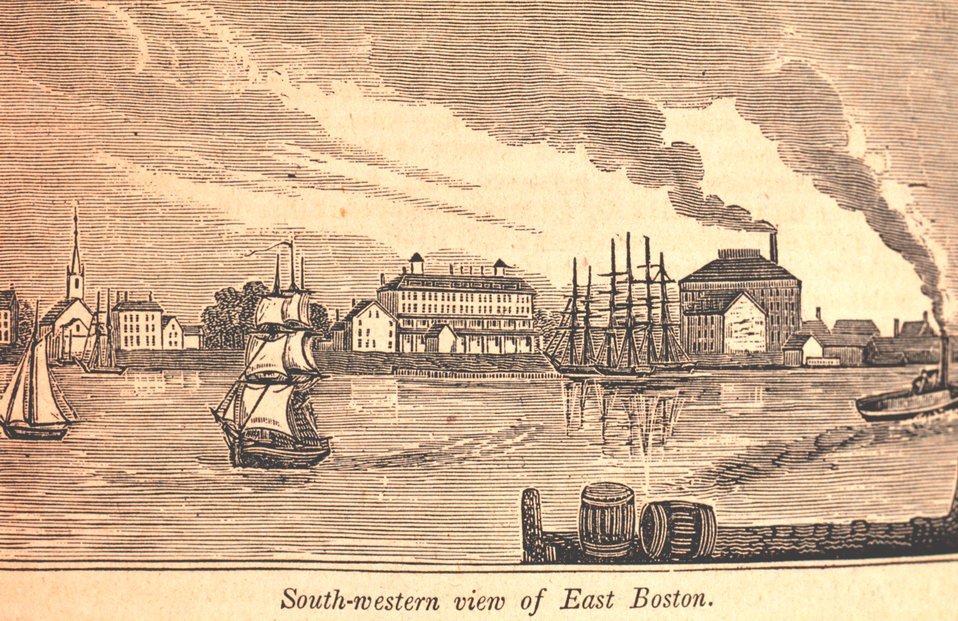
A southwestern view of East Boston as seen from Lewis's Wharf, East Boston ferryway. East Boston was formerly known as Noddle's Island. The Maverick Hotel, named for Samuel Maverick a 17th Century colonist, is the large building in the center. In: Historical Collections ... of Every Town in Massachusetts. 1841.